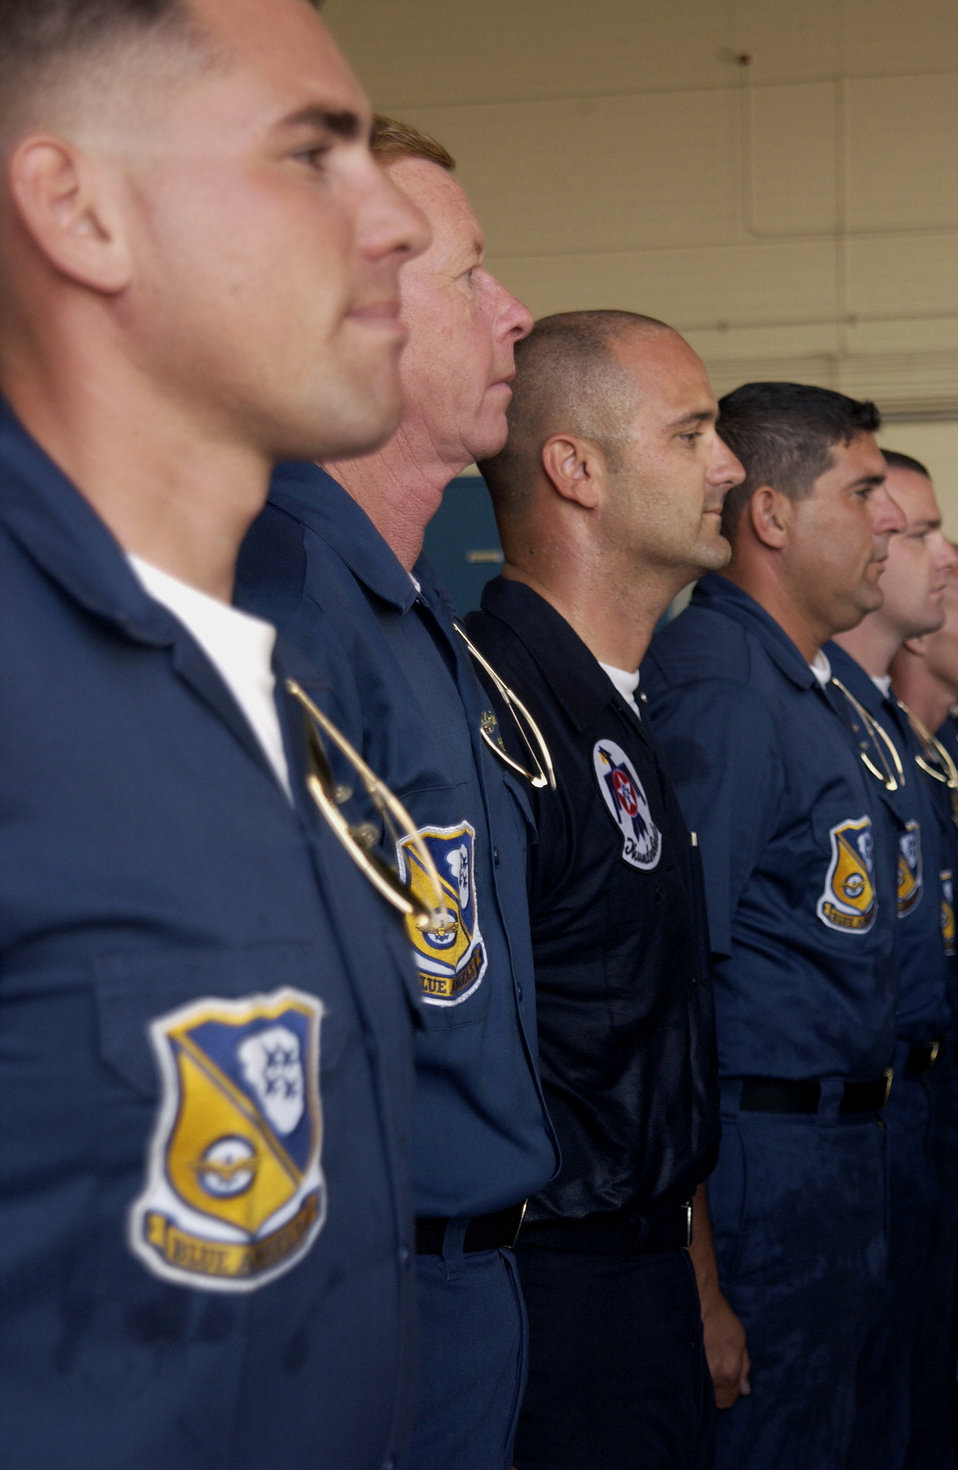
Cross into the Blue Angels

MARINE CORPS AIR STATION MIRAMAR, Calif. -- Tech. Sgt. Brian Plauche (third from left) stands in formation Oct. 18 with Navy Blue Angels during roll call. Plauche is the first reservist assigned to the U.S. Air Force Demonstration Squadron Thunderbirds. The crew chief was on a two-week exchange program with the Navy team.